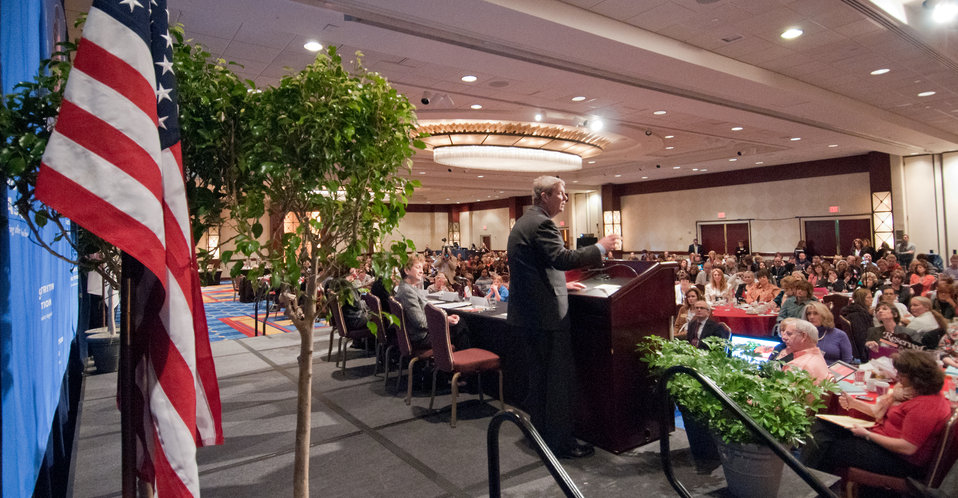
U.S. Department of Agriculture Secretary Tom Vilsack spoke with and took questions during the School Nutrition Association’s closing general session of their 39th annual Legislative Action Conference at the J.W. Marriott Hotel in Washington, D.C., Wednesday, on March 9, 2011. The theme of the Secretary Vilsack’s speech was “The Realities of Implementing New Meal Patterns and Operational Requirements.” Of the many things he spoke about, he also shared with the audience how his motivation came from how personally important it was to him, that his adopted mother made a lunch for him everyday he went to school despite the challenges of her alcoholism and family struggles. He also talked about the Healthy, Hunger-Free Kids Act of 2010 (Public Law 111-296 and how chefs were involved in the development of the USDA’s proposed updated nutrition standards for school meals development.